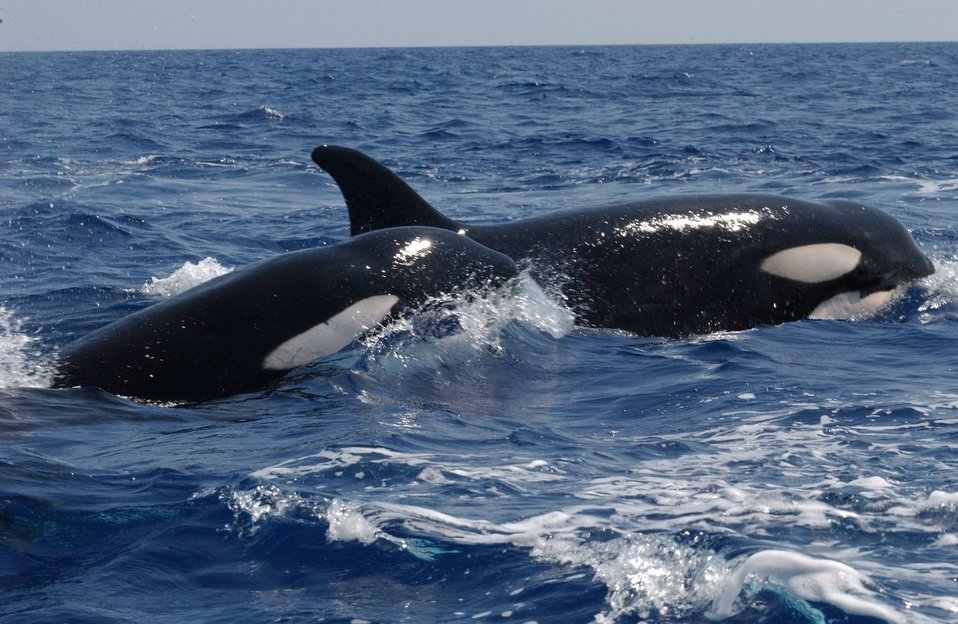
Killer whales